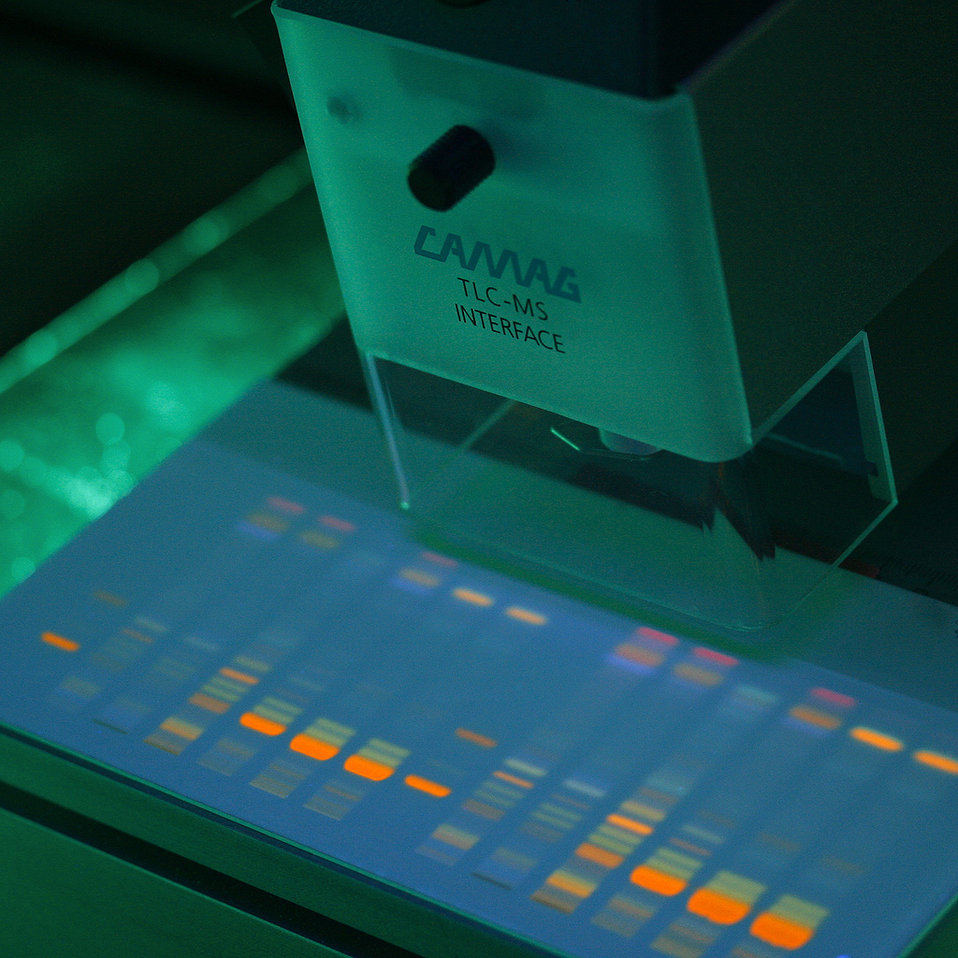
OAK RIDGE NATIONAL LABORATORY RESEARCHERS USE HIGH-RESOLUTION, THIN-LAYER CHROMATOGRAPHY PLATES TO SEPARATE COMPLICATED MIXTURES ( IN THIS CASE, GINKGO BILOBA LEAF EXTRACTS)

The separated components appear as bands under fluorescent lighting. Once separated, the components of the mixture can be analyzed using mass spectrometry. These techniques could be applied to several fields of study, including creating and using nanoscale materials to control molecular level processes in field such as catalysis, energy conversion and materials research.